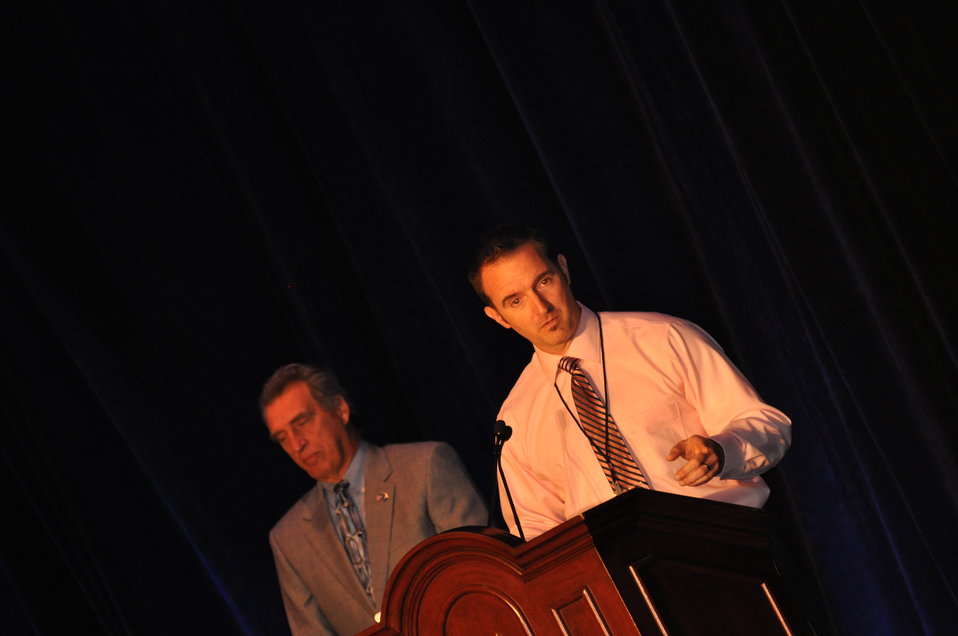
Information Exchange

Kole Helvie, an operations specialist with E2 Consulting Engineers at Savannah River Site, talks about his experience in Recovery Act work at the Information Exchange. Savannah River Nuclear Solutions President and CEO Garry Flowers listens in the background.